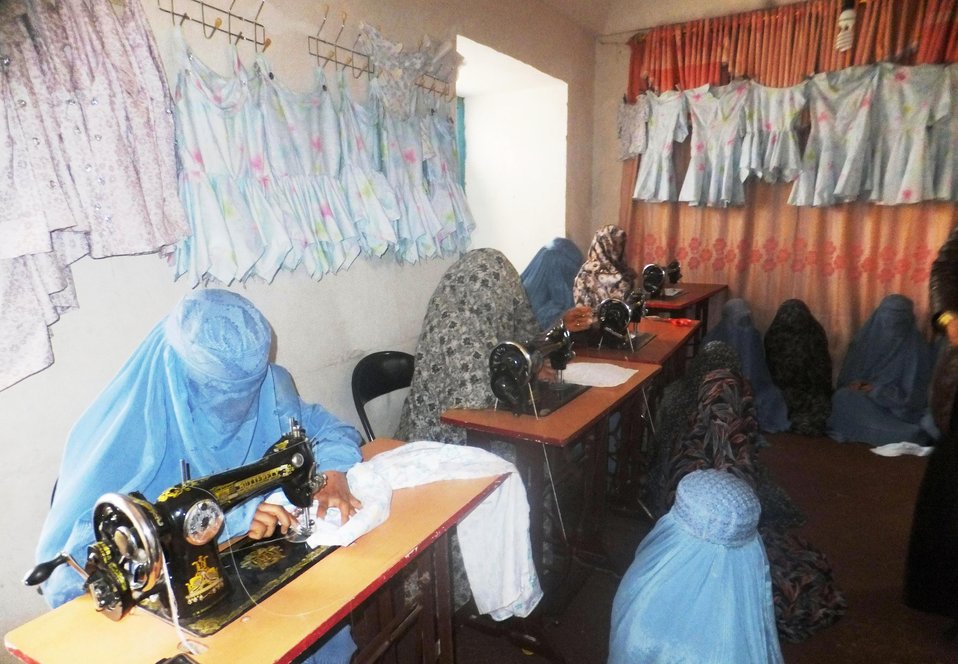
20 local women practice tailoring skills in Rawandan village in Pashtun Zarghun District